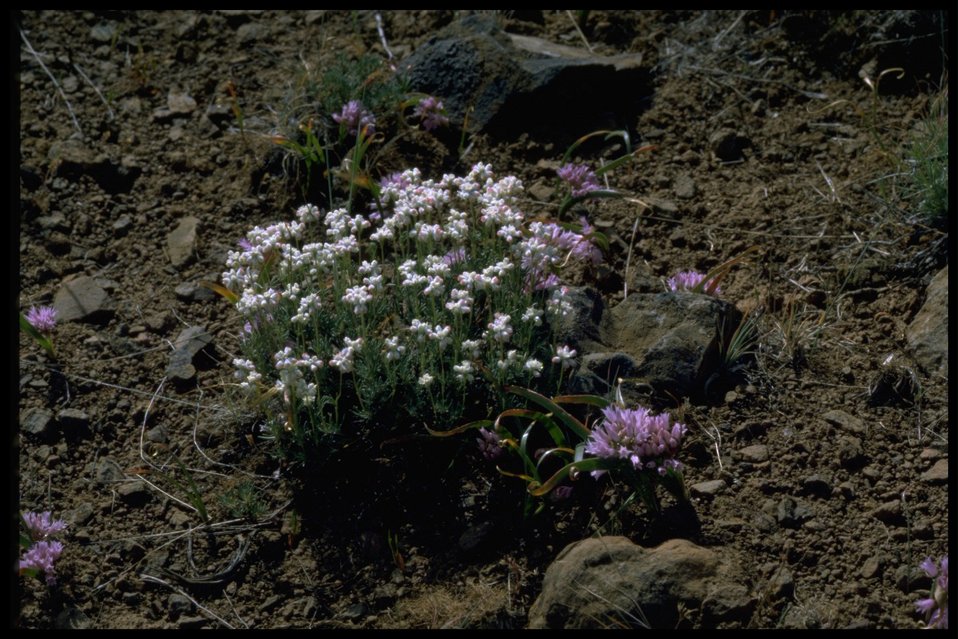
Medium shot of Thyme-leaved Buckwheat wildflowers and Tolmie's onion.